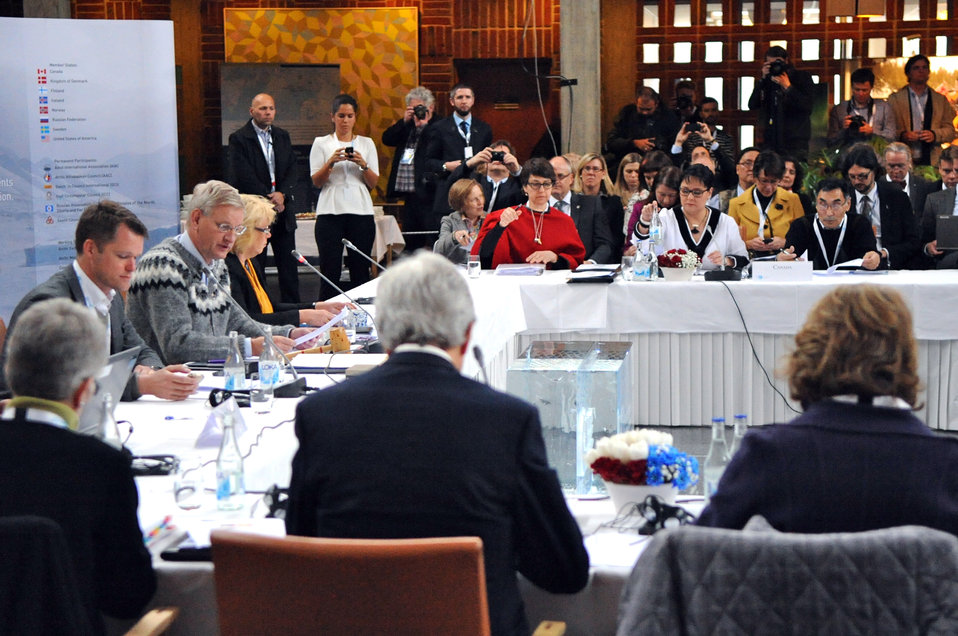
Secretary Kerry Attends the Arctic Council Ministerial Session

Swedish Foreign Minister Carl Bildt, host of the eighth Arctic Council meeting, opens the closing session attended by U.S. Secretary of State John Kerry at the City Hall in Kiruna, Sweden, on May 15, 2013.